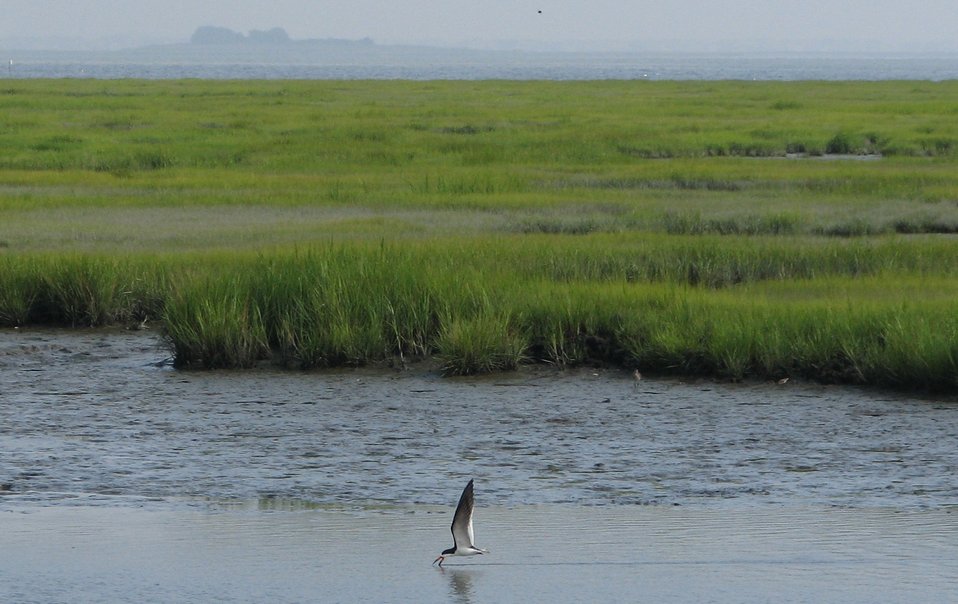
Black Skimmer at the Wildlife Drive at Edwin B. Forsythe NWR

Black Skimmer (Rynchops niger) at the Wildlife Drive at Edwin B. Forsythe NWR